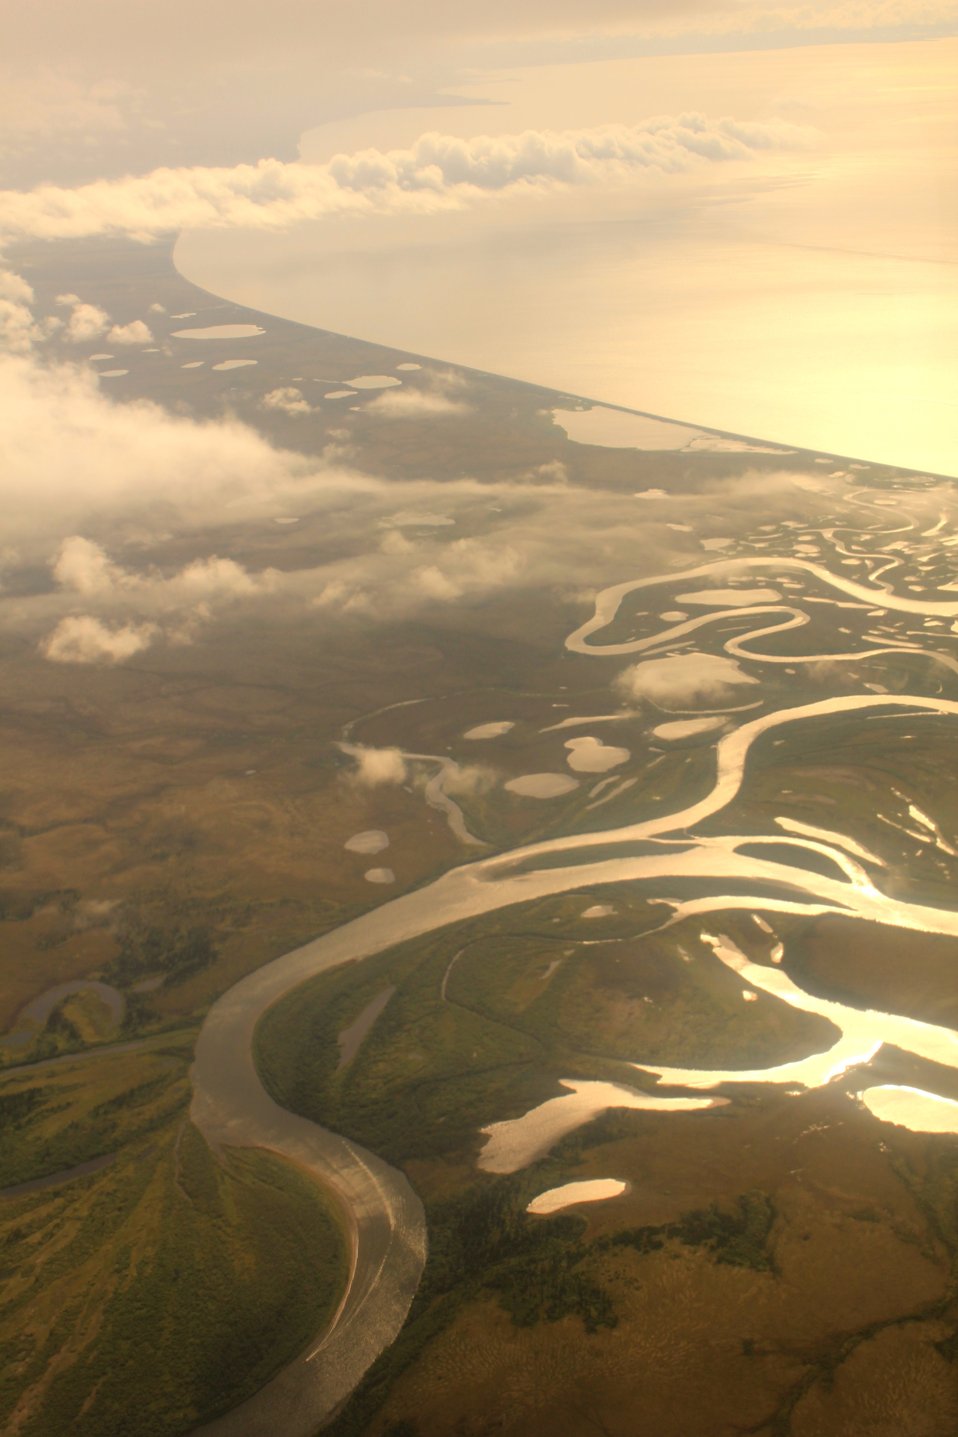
Flying over the Unalakleet River Delta in the late afternoon on the way to Anchorage. Norton Sound in upper right.